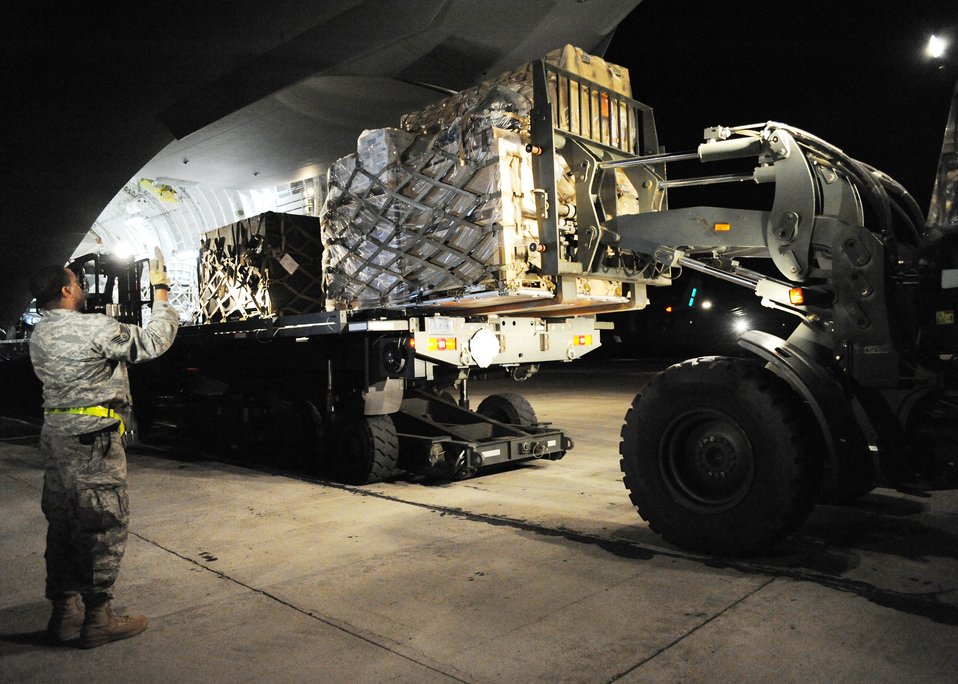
Haiti Humanitarian Effort

Equipment is unloaded from a C-17 Globemaster III in Port-au-Prince, Haiti, Jan. 15, 2010. The supplies are a continuous flow from Air Mobility Command to respond to the humanitarian effort in Haiti.